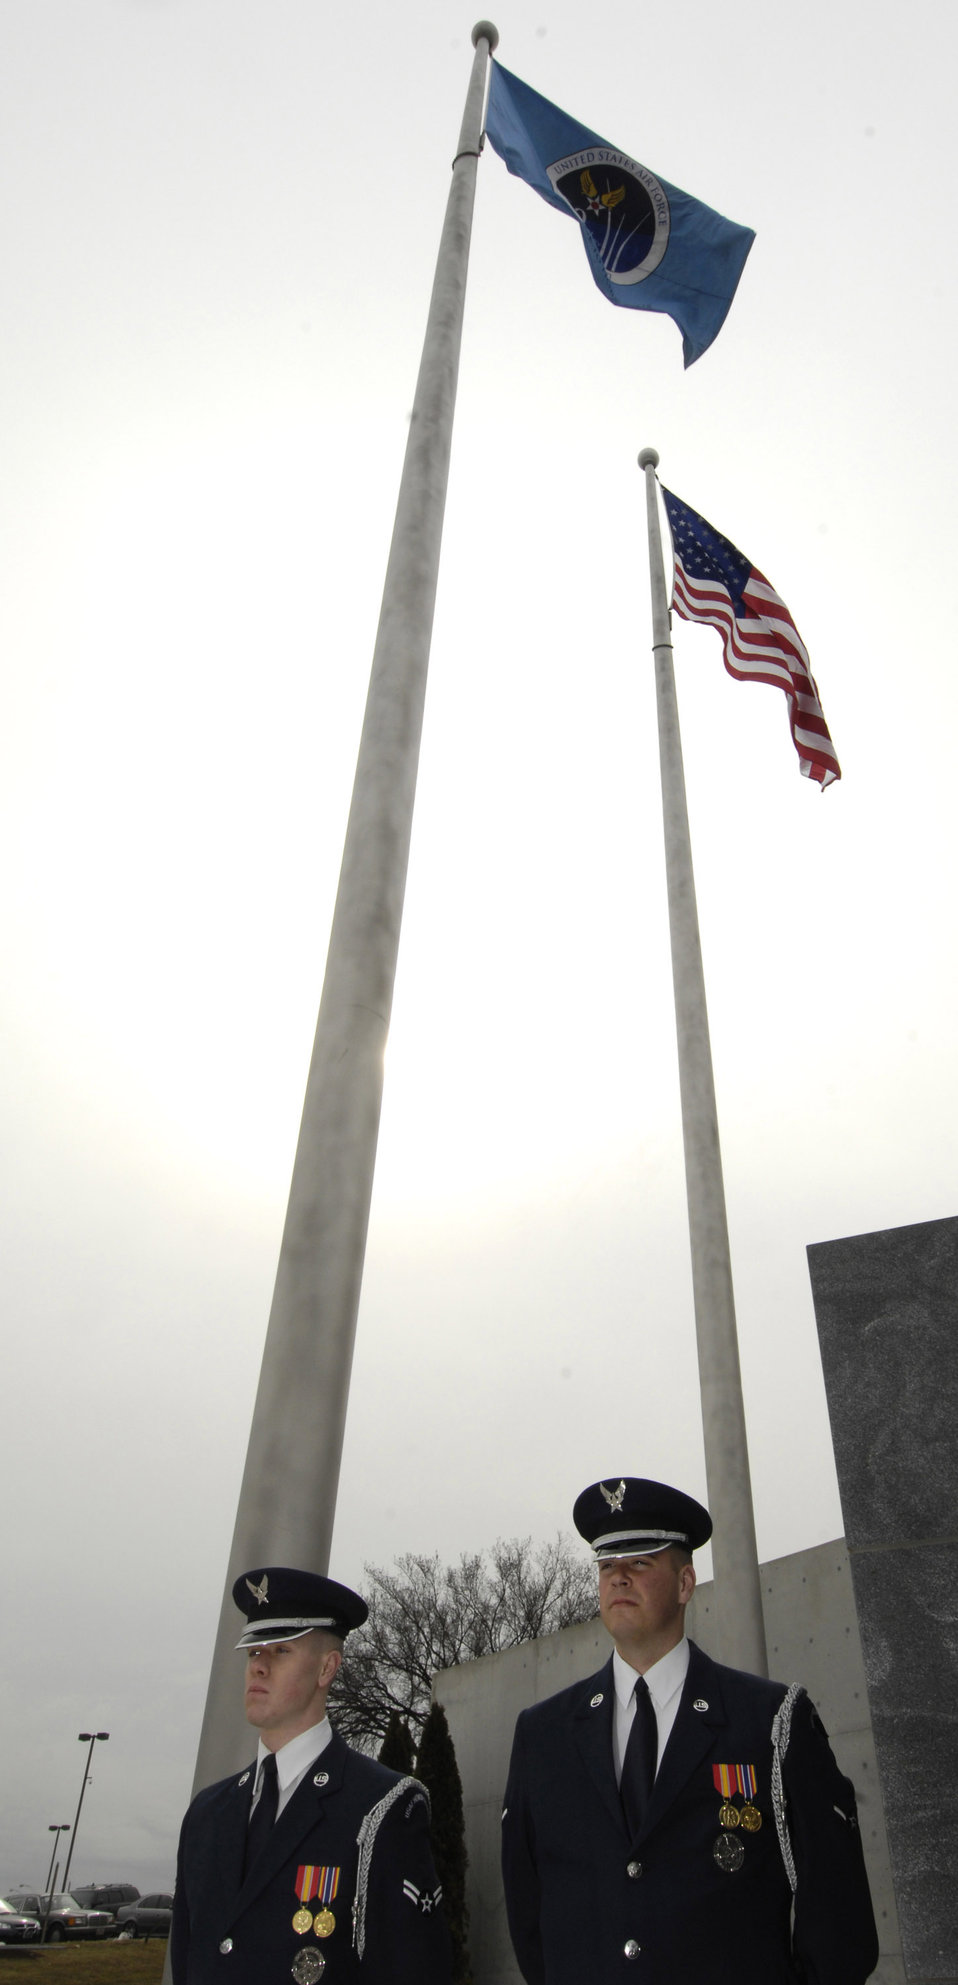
Air Force 60th Anniversary flag raised at memorial

Airman 1st Class Donald Meissner (left) and Airman Steven Lowery stand at attention after raising the Air Force's 60th Anniversary flag March 1 at the Air Force Memorial in Arlington, Va. The flag will fly at the memorial until the Air Force's 60th birthday on Sep 18. The Airmen are Air Force Honor Guard ceremonial guardsmen.